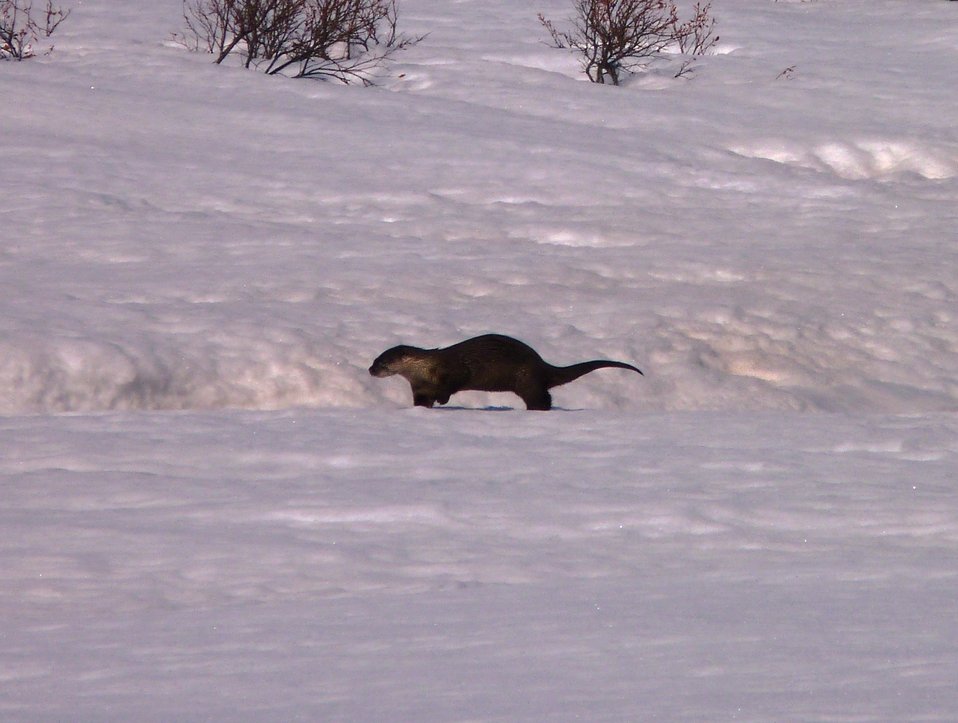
River Otter

Andreafsky Wilderness, Yukon Delta National Wildlife Refuge